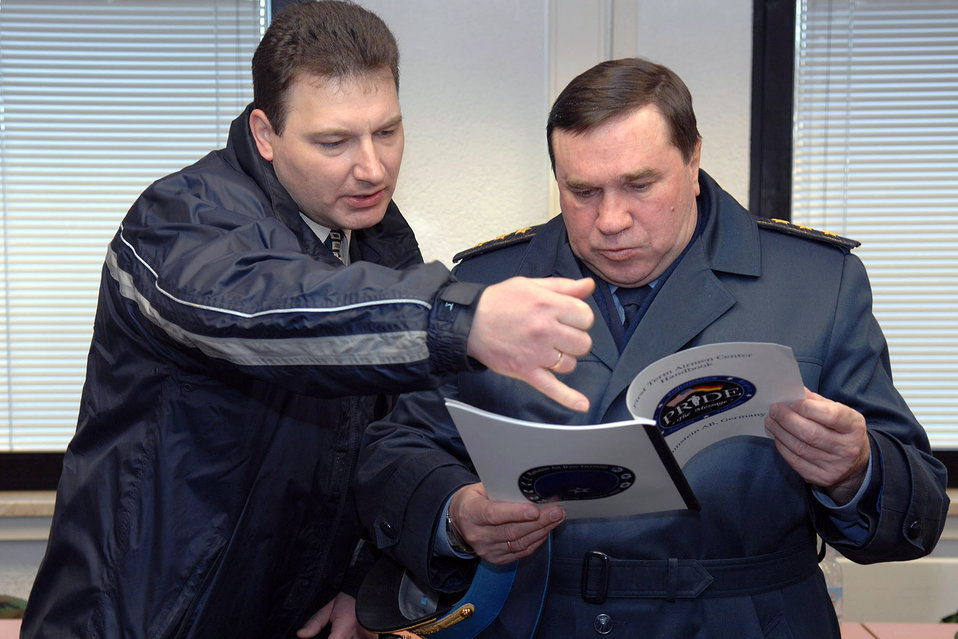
USAFE, Ukrainian air force continue spirit of cooperation

Ukranian Air Chief Gen.-Col. Anatoliy Yakovich Toropchyn reviews a copy of the First Term Airman Center's handbook during his visit to FTAC Jan. 25 at Ramstein Air Base, Germany. His visit was to familiarize himself with U.S. Air Forces in Europe's senior leadership and enlisted/officer training and development.